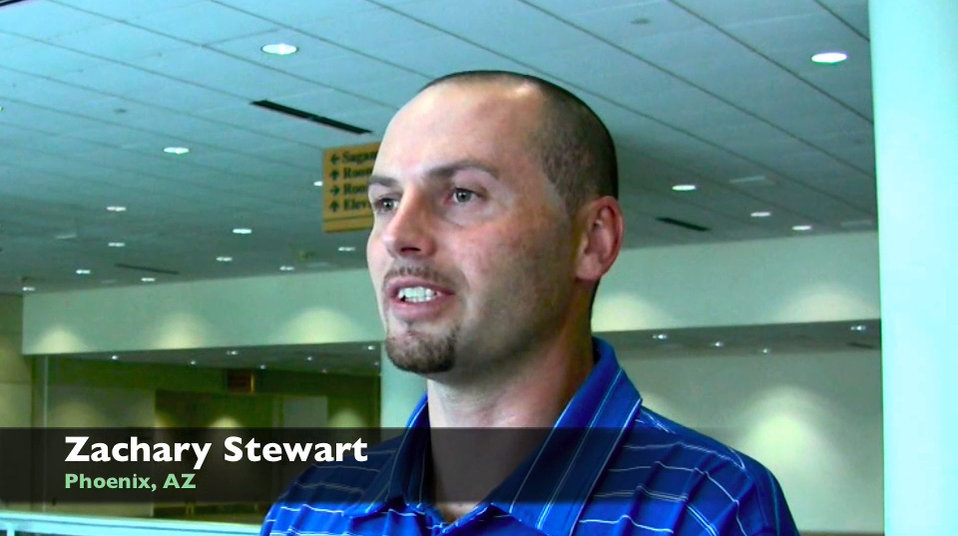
Zachary Stewart at the National Weatherization Conference

'So, I cashed in my 401k and the little severance I had left and I made a gamble. It was either make your mortgage payment, or go down and try to take some classes.'... 'That was the break that I needed. That was my networking opportunity to get some face time with somebody. I’m so thankful for it.' ... 'This is what I want to do. I’m fortunate that I found something. Also, not only to support my family, but where I want to go the rest of my life, like this is what interests me. I love doing the problem solving and I found my career, you know.'